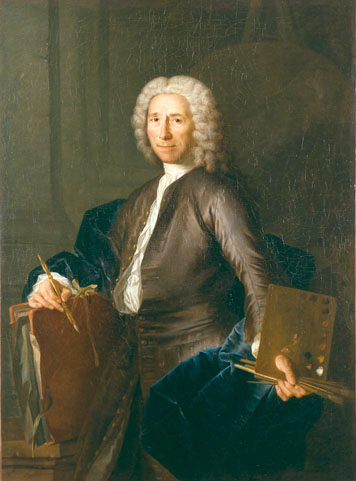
Portrait de Henri de Favanne par Louis Autreau (1741)